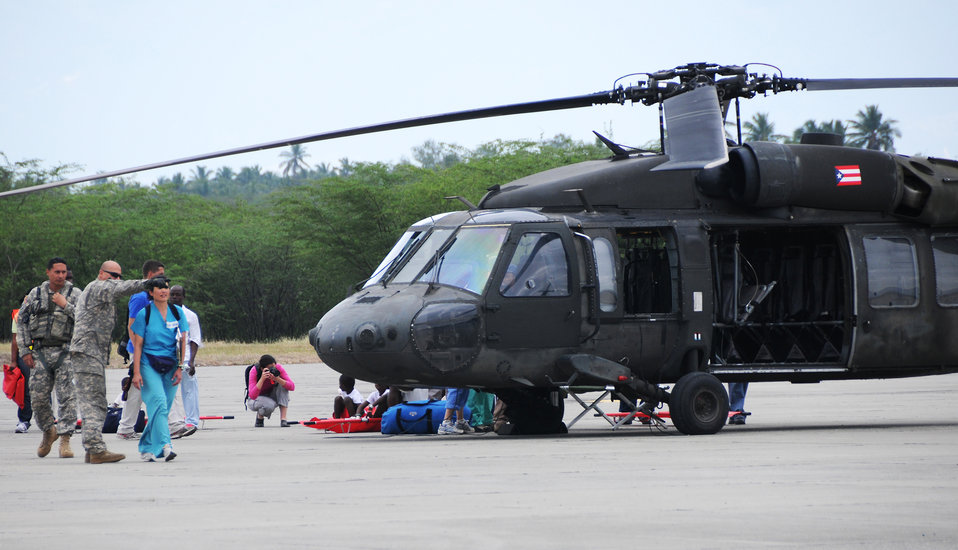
Kentucky Airmen move supplies through Dominican Republic

Airmen from the Kentucky National Guard's 123rd Contingency Response Group help to offload wounded Haitian refugees and medics from Puerto Rico National Guard UH-60 Black Hawk helicopters at the air hub Jan. 25, 2010, in Barahona, Dominican Republic.